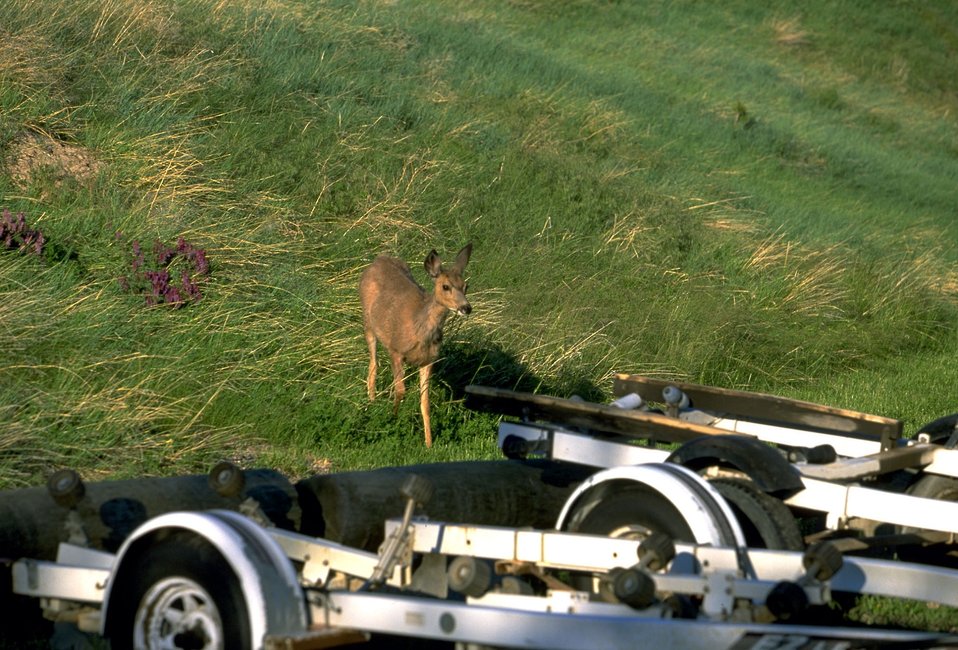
A deer by a boat trailer at Holter Dam